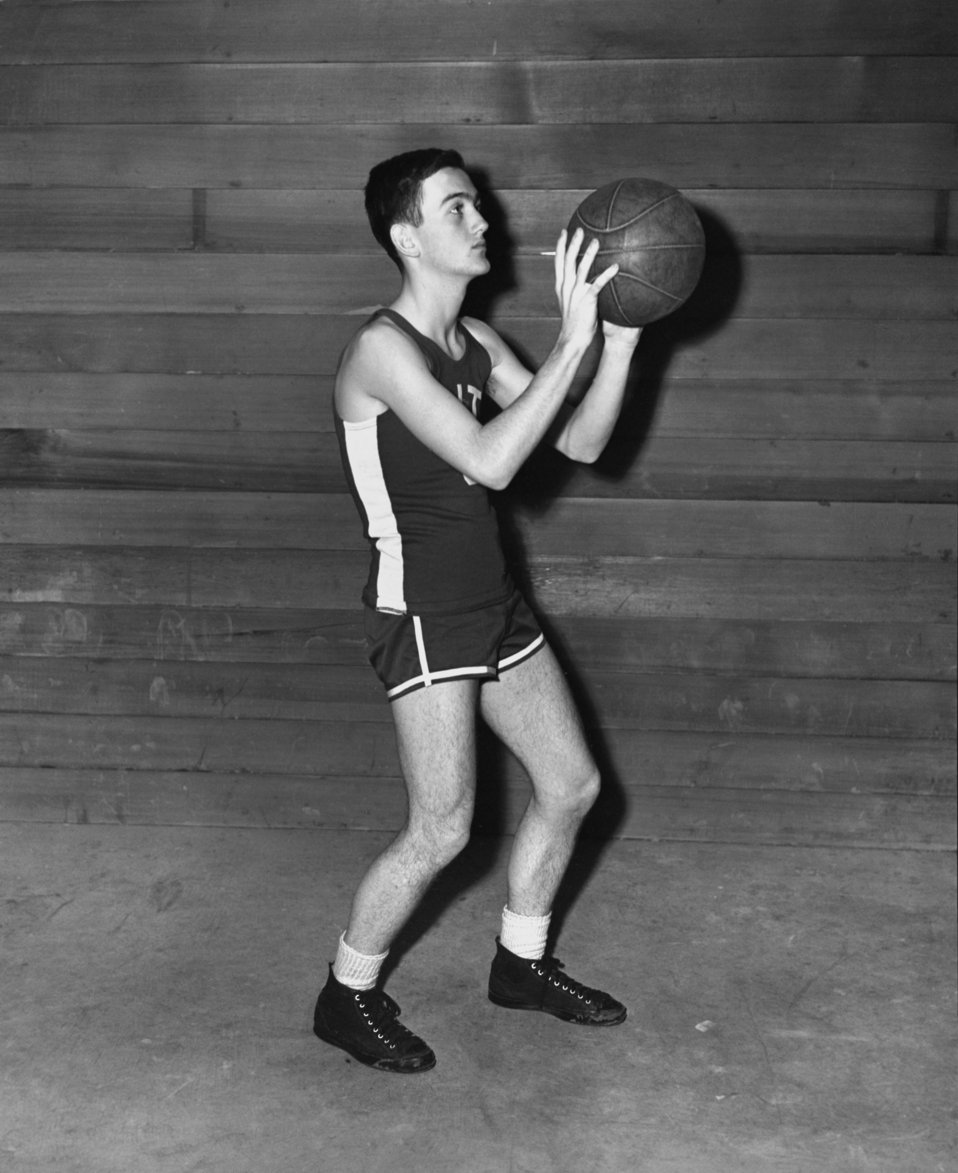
Basketball A.I.T. Oak Ridge 1947

3280-3a DOE photo Ed Westcott 1-29-1947 Oak Ridge Tennessee